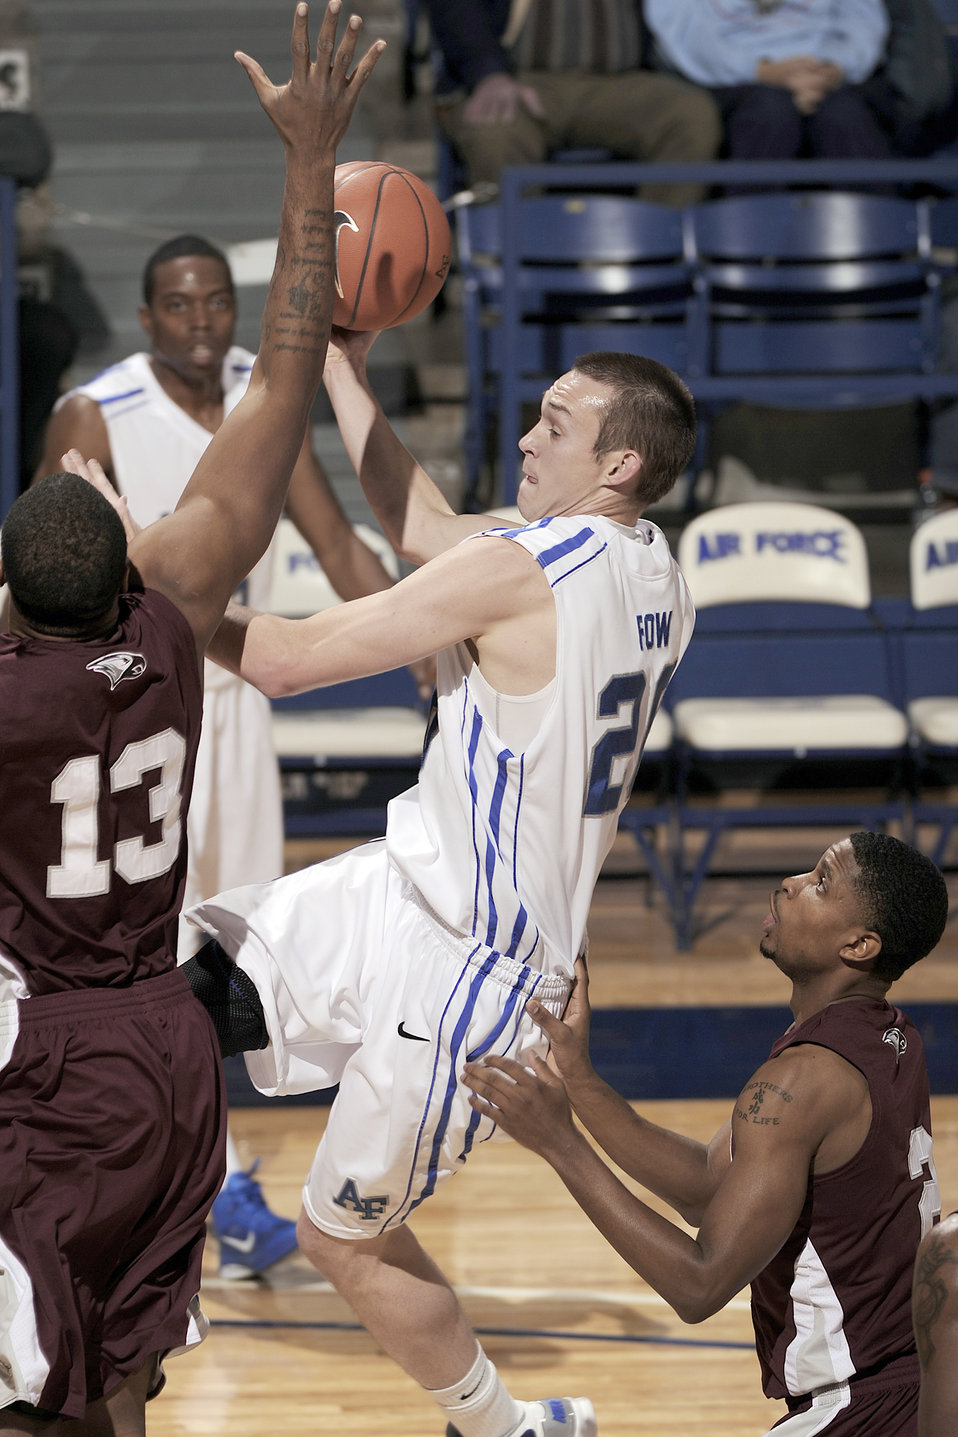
Falcons defeat the Eagles

Falcons forward Tom Fow drives for two against the Eagles' David Best as the U.S. Air Force Academy Falcons defeats North Carolina Central 73-56, Dec 11, 2010, at Clune Arena in Colorado Springs, Colo. Fow had 10 points and 3 rebounds against the Eagles.